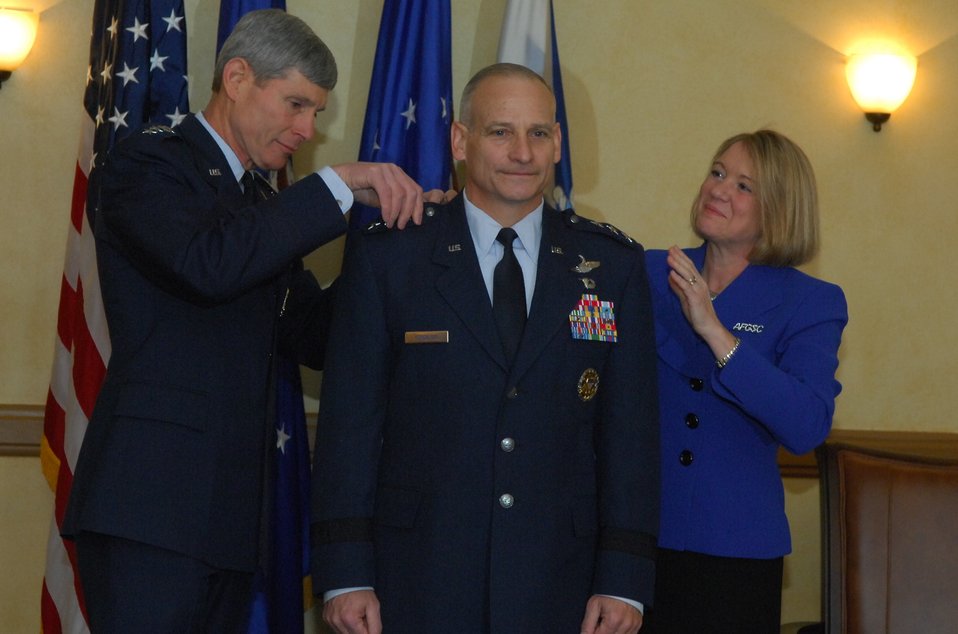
Air Force Global Strike Command gets new top leader

Air Force Chief of Staff Gen. Norton Schwartz and Mrs. Julie Kowalski pin the third star on Lt. Gen. James Kowalski, Jan. 6, 2011, at Barksdale Air Force Base, La. About an hour later, General Kowalski assumed command of Air Force Global Strike Command, becoming responsible for organizing, training and equipping all U.S. ICBM and nuclear-capable bomber forces.